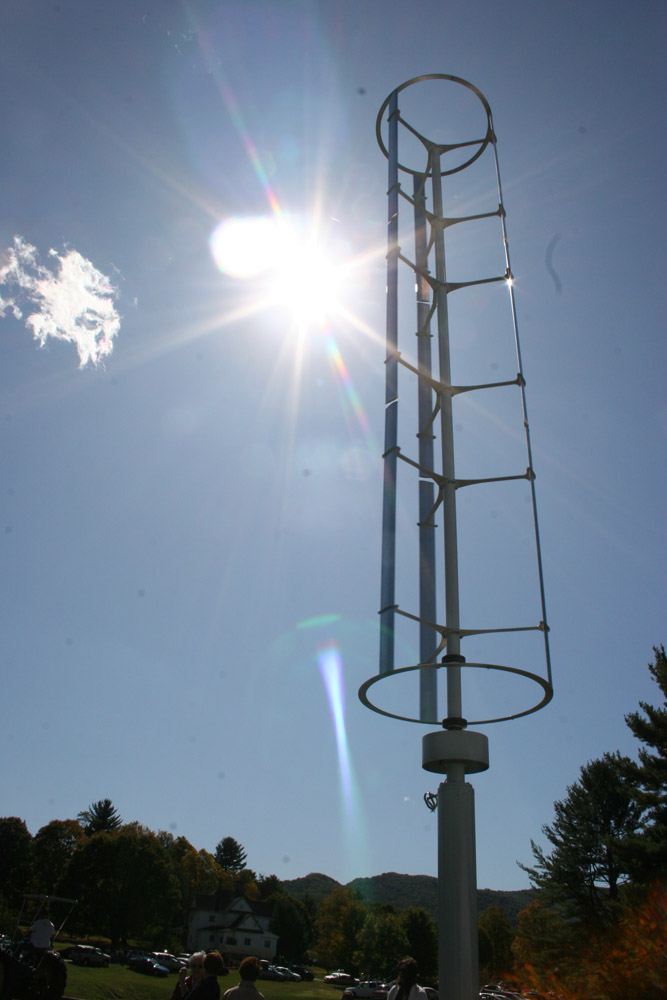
Freshwater Folk Festival

The 5th Annual Freshwater Folk Festival at White Sulphur Springs National Fish Hatchery in West Virginia.Credit: USFWS